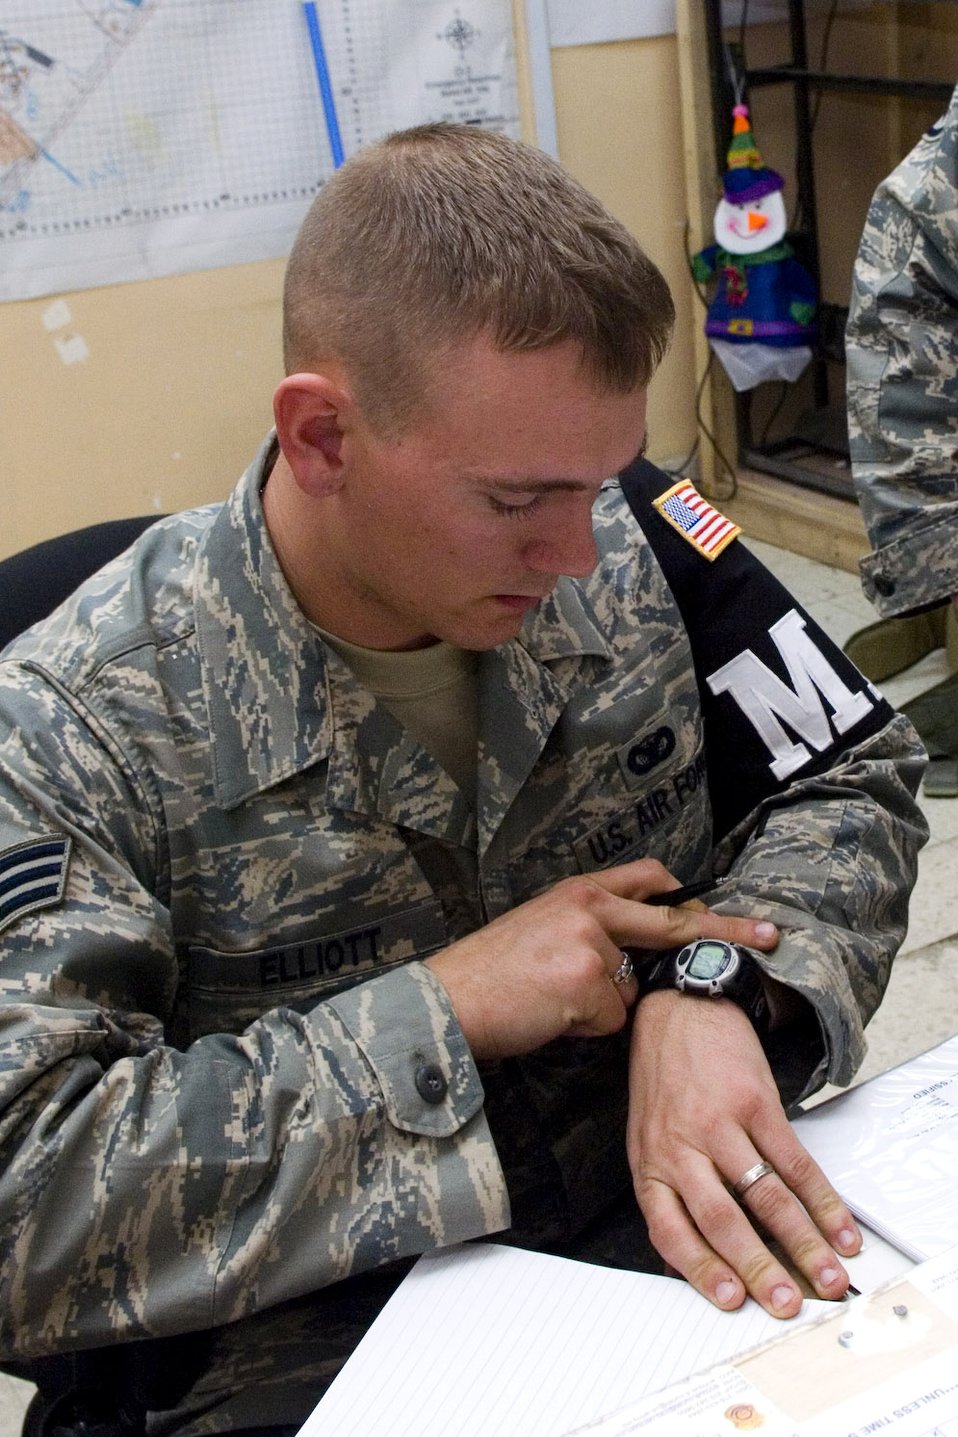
Balad Airmen keep order, maintain security

Senior Airman Jon Elliott checks his watch to jot down the time a patrolmen responded to a medical emergency Dec. 26 at Balad Air Base, Iraq. Airman Elliott is a 332nd Expeditionary Security Forces Squadron Detachment 1 Provost Marshal Office desk clerk and deployed from Whiteman Air Force Base, Mo.